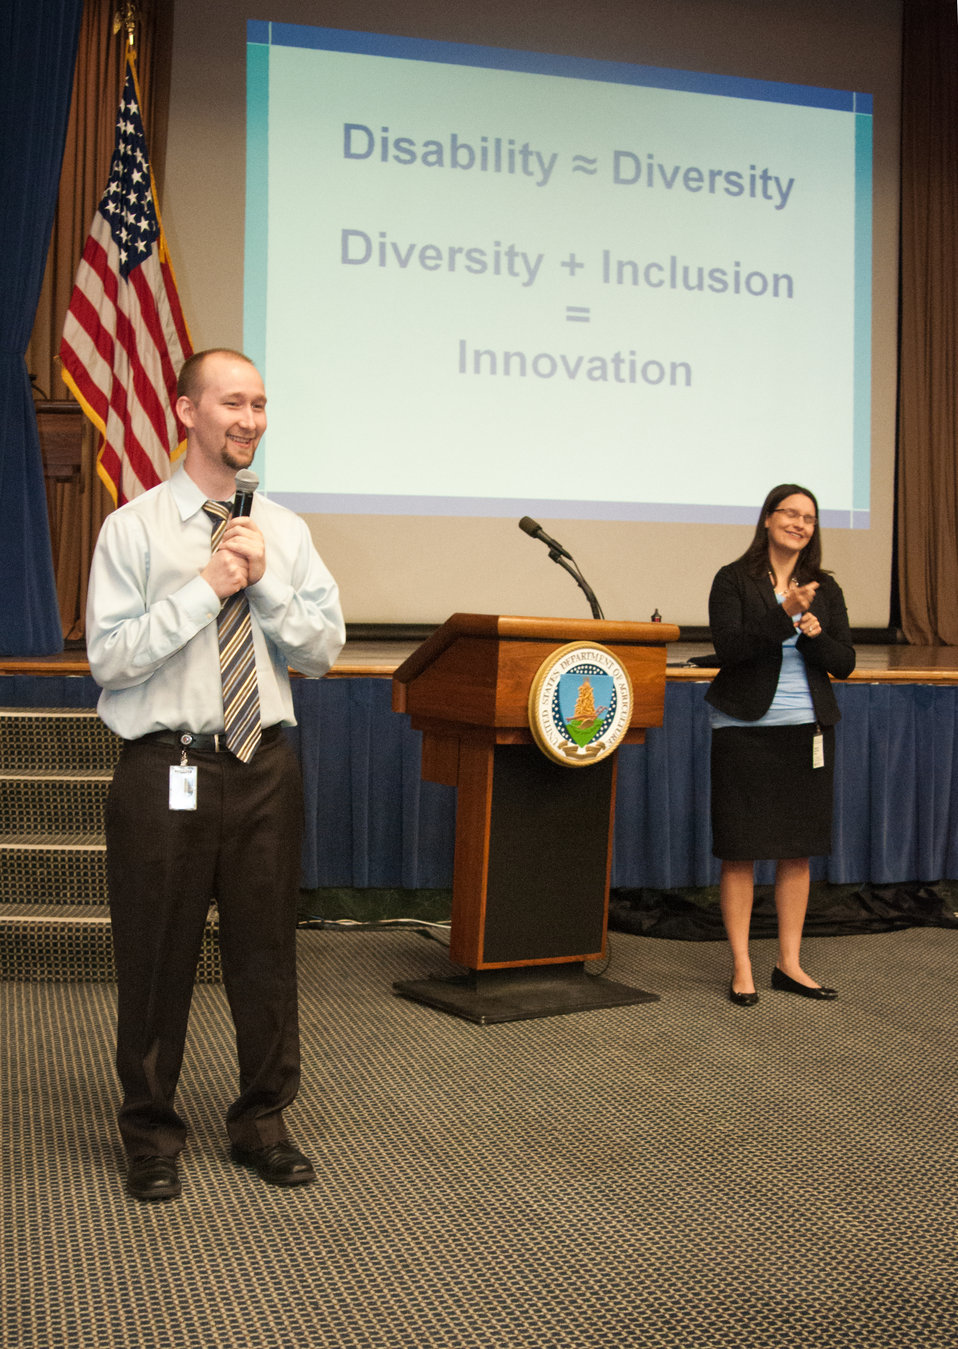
Office of Personnel Management (OPM) Diversity and Inclusion Program Manager Michael Murray discusses diversity and inclusion at the U.S. Department of Agriculture (USDA) Office of Human Resources Management (OHRM) Disability Employment Program Team Training at USDA in Washington, D.C. on Tuesday, May 14, 2013. Partners in Sign (PINS) Unlimited employee Susie Needham interprets for hearing impaired employees during the event.